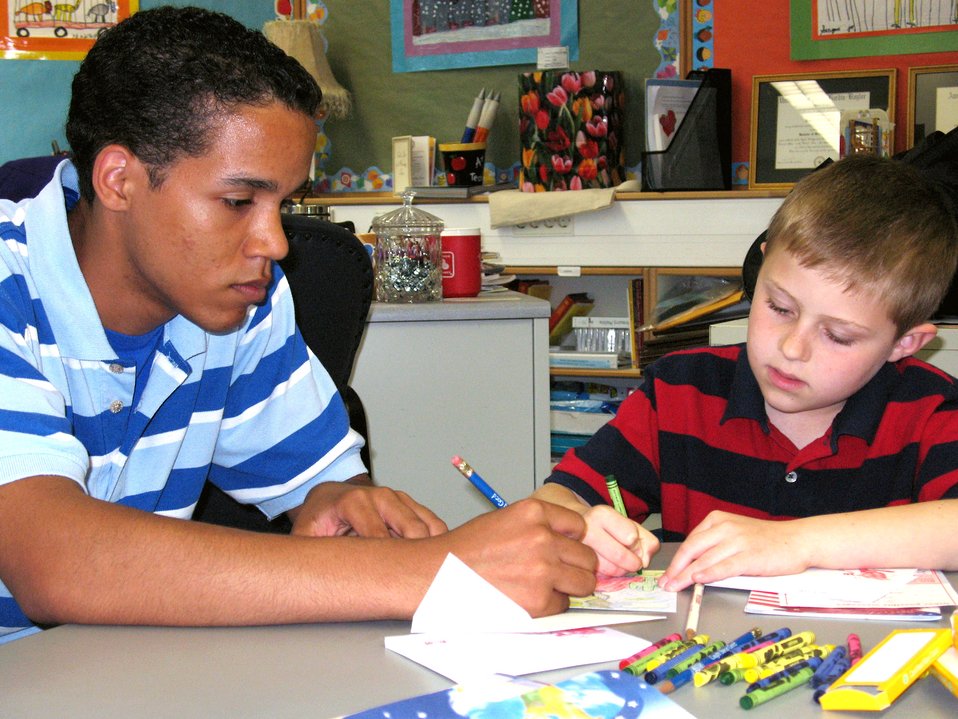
School program helps children cope with deployments

Brice Relaford helps Caleb Parrish draw a card for his father April 26 at Ramstein Air Base, Germany. Brice and Caleb are